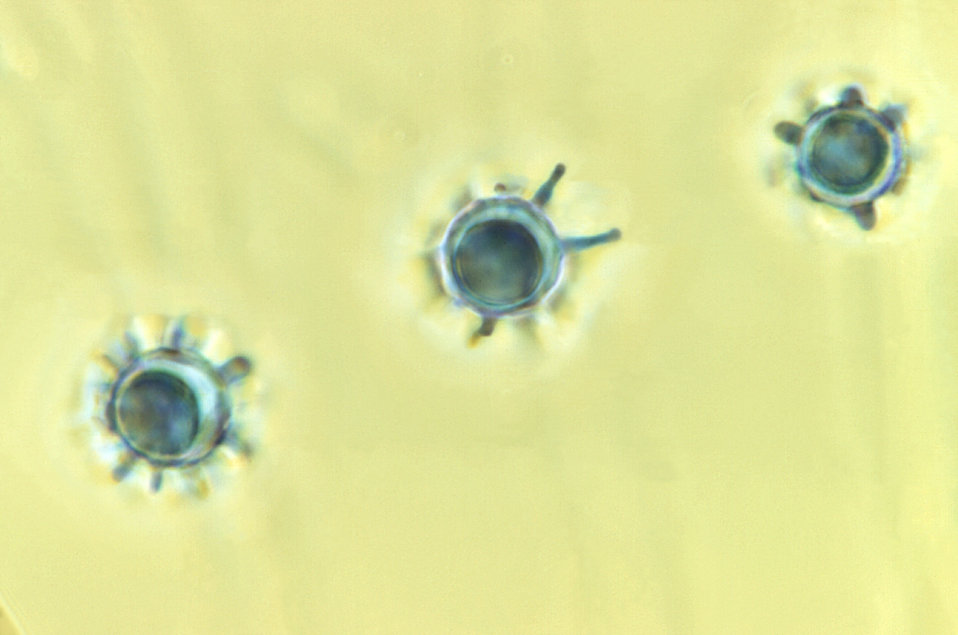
Under a magnification of 1125X this photomicrograph depicted the the presence of three Histoplasma capsulatum macroconidia, differentiated from the microconidia by the presence of projections emanating from their surface, as seen in this case. H. capsulatum is the etiologic agent responsible for causing the disease known as histoplasmosis.What is histoplasmosis?